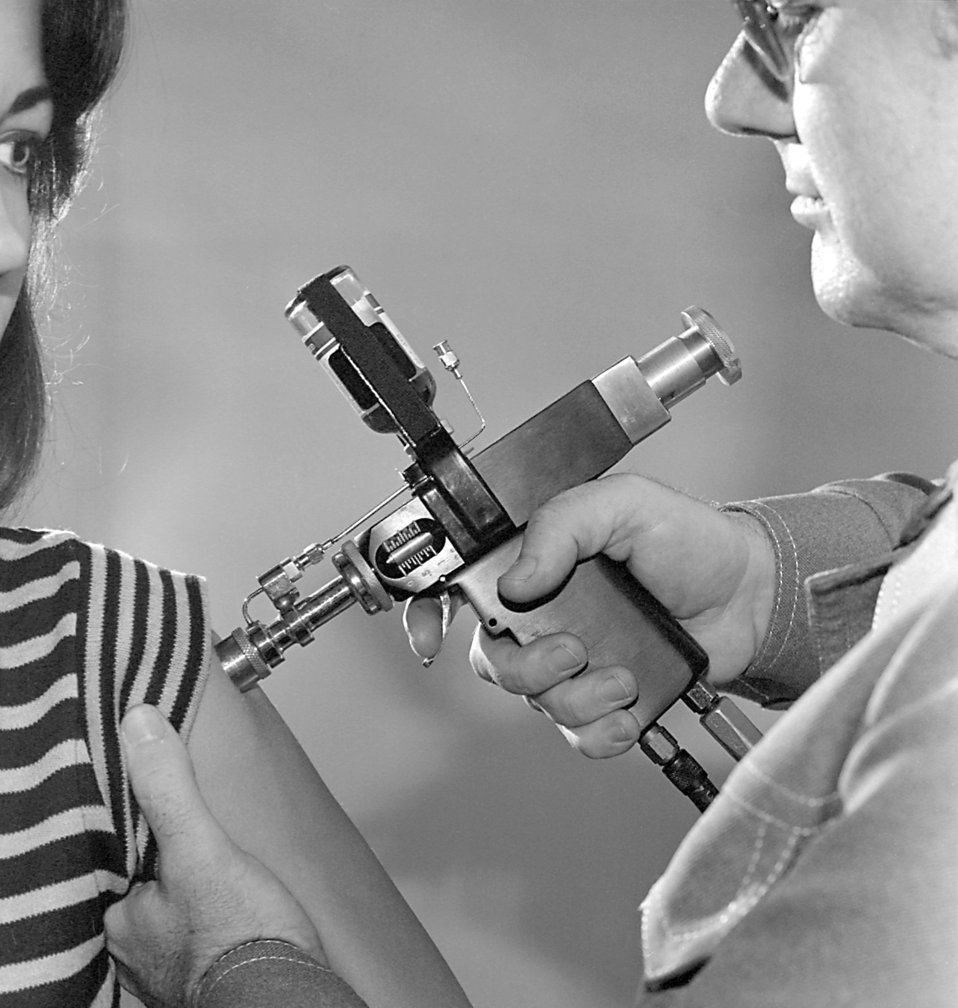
Administration of a vaccine during the 1976 New Jersey immunization project, for Influenza A (swine flu).